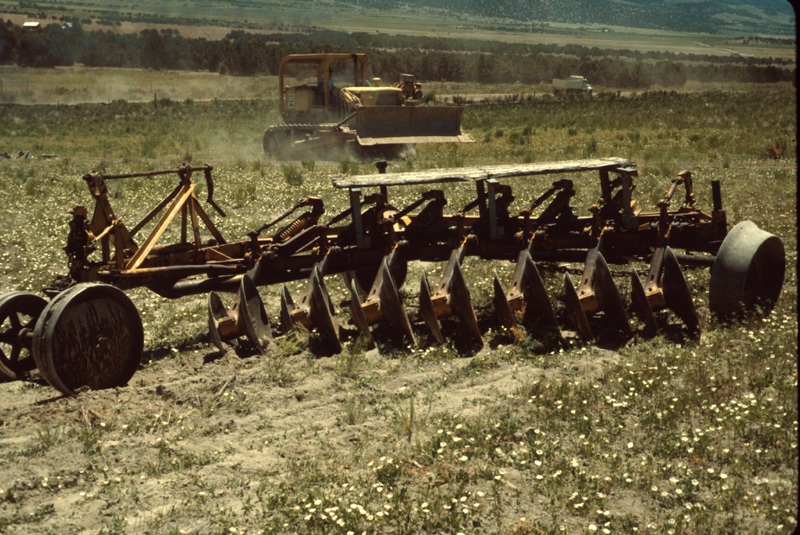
Rangeland Plow Range Restoration Project Lower Snake River District